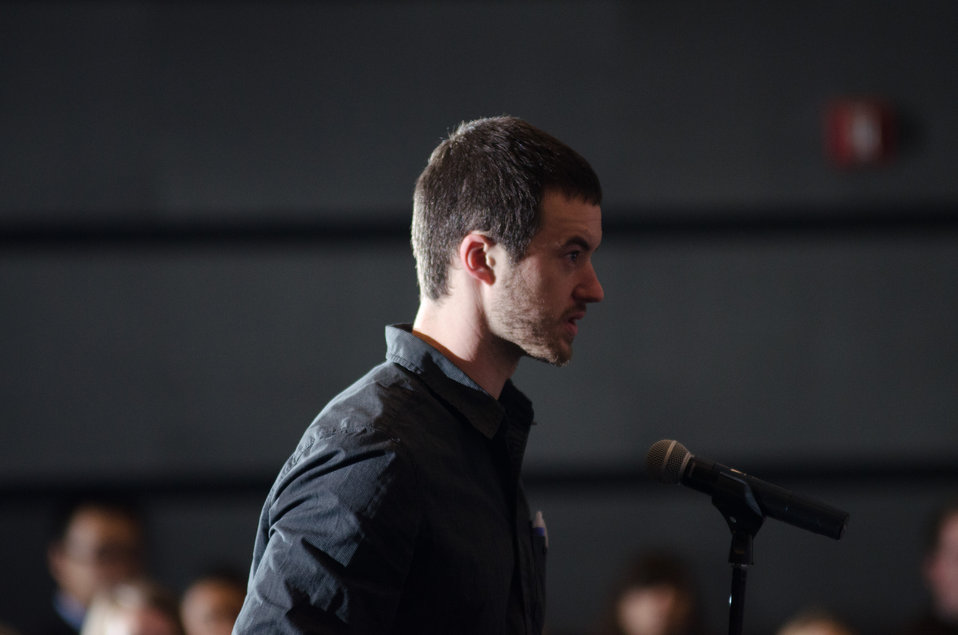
Columbia Collage of Arts and Sciences Senior John Russell, presented a question to the panelists, National Sustainable Agriculture Coalition Executive Director Susan Prolman, Food Research and Action Center President Jim Weill, Michael Fields Agricultural Institute Public Policy Program Director Margaret Krome, Environmental Working Group President and Co-Founder Ken Cook, Agriculture Deputy Secretary Kathleen Merrigan and Former Agriculture Secretary, Congressman and moderator Dan Glickman at the “Shaping the Farm Bill for a Sustainable Future” Forum in the Jack Morton Auditorium, at the Trachtenberg School of Public Policy and Public Administration, on the George Washington University campus in Washington, D.C., on Thursday, March 1, 2012.